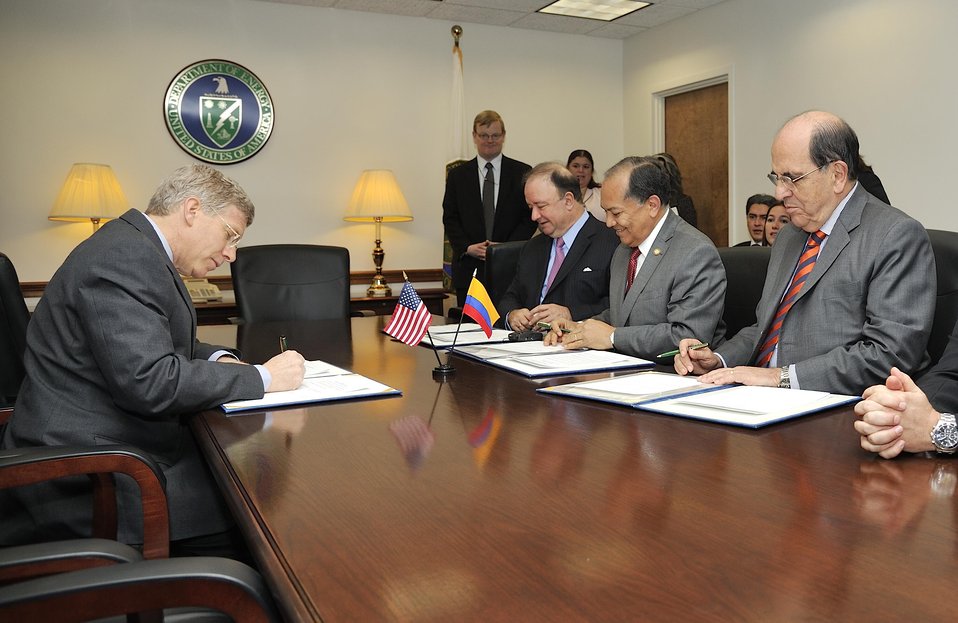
U.S. Deputy Secretary of Energy Daniel Poneman, Colombia's Minister of Energy and Mines Amylkar Acosta, Mayor of Santiago de Calí Rodrigo Guerrero, and Director of Planning of Colombia Tatyana Orozco signed a Memorandum of Understanding (MOU) to collaborate in the development of a Solar Decathlon Latin America and Caribbean competition.